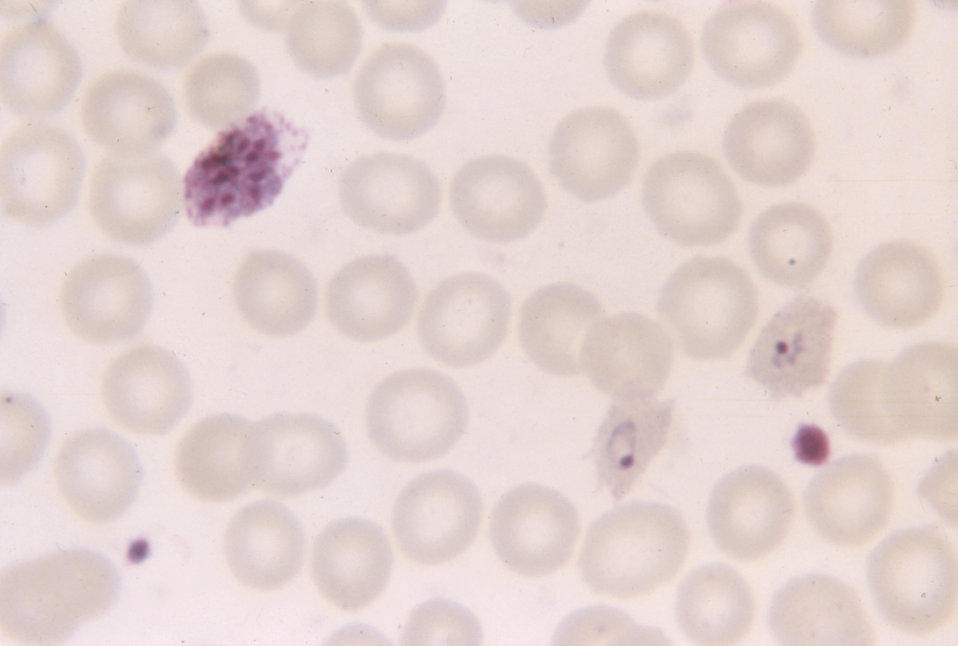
This photomicrograph reveals a young, immature Plasmodium ovale schizont.